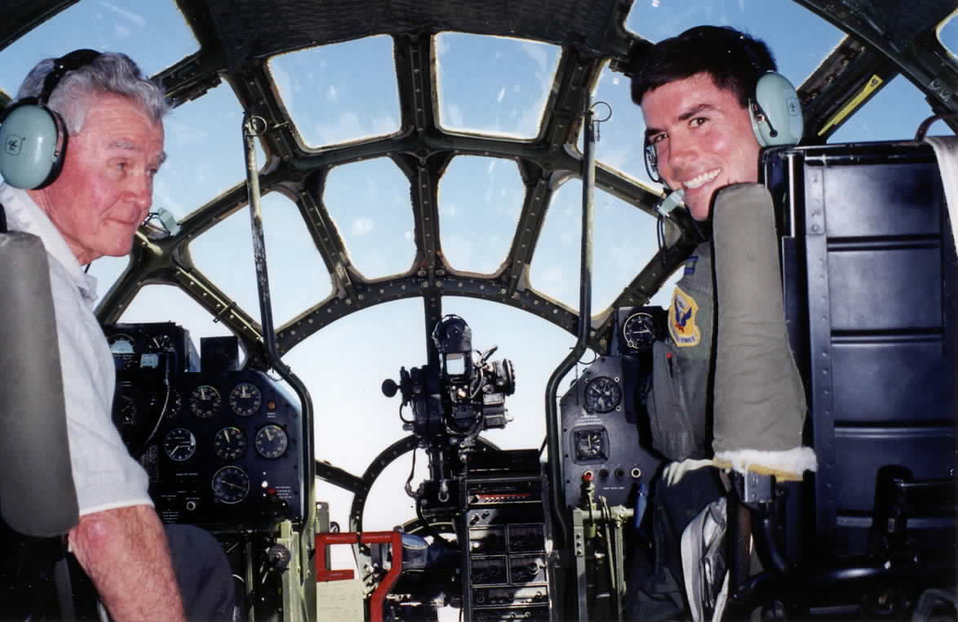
Grandson of legendary Air Force pilot

Retired Brig. Gen. Paul Tibbets Jr. (left) and his grandson, Col. Paul Tibbets IV, then a captain, fly the last flyable B-29 Superfortress, 'Fifi,' Oct. 2, 1998, in Midland, Texas.
. General Tibbets was the pilot in command of the Enola Gay when it dropped the atomic bomb on Hiroshima, Japan on Aug. 6, 1945. Then a captain, the younger Tibbets is currently the Air Force Inspection Agency commander at Kirtland Air Force Base, N.M.